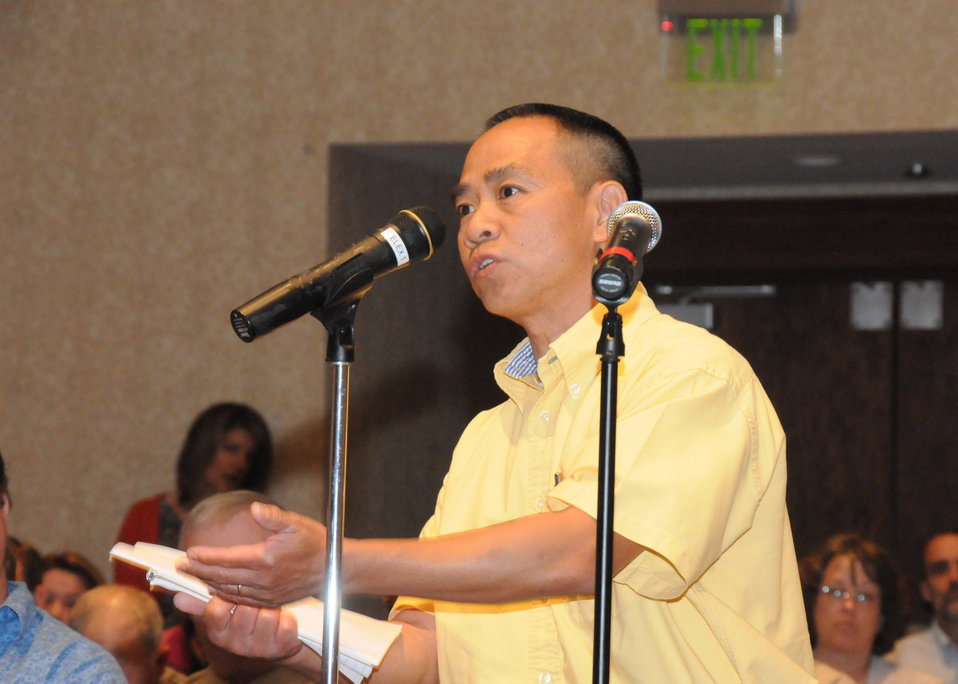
The U.S. Department of Agriculture (USDA) held the third of six Cultural Transformation Employee listening sessions in Kansas City, MO, on Wednesday, April 14, 2010. USDA employees expressed their concerns with issues at the Department and made suggestions for correcting them and improving the image of USDA. USDA photo 10di1309-175.